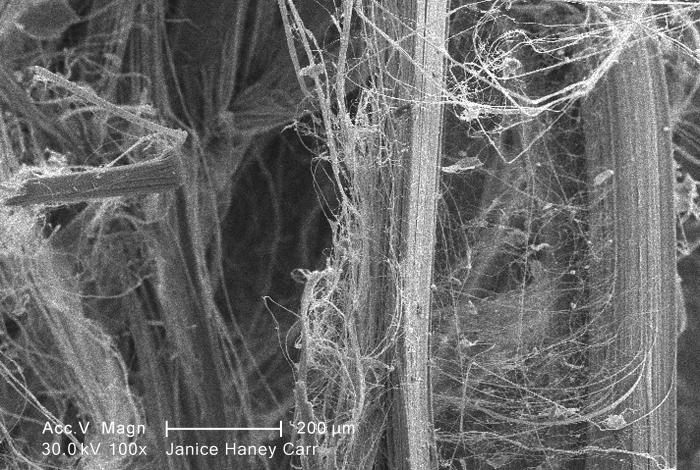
Under a low magnification of 100X, this scanning electron micrograph (SEM) revealed some of the microcrystalline ultrastructure exhibited by a piece of raw chrysotile, or white asbestos, which had been excavated from the Lowell Asbestos Mine on Belvidere Mountain, Vermont.